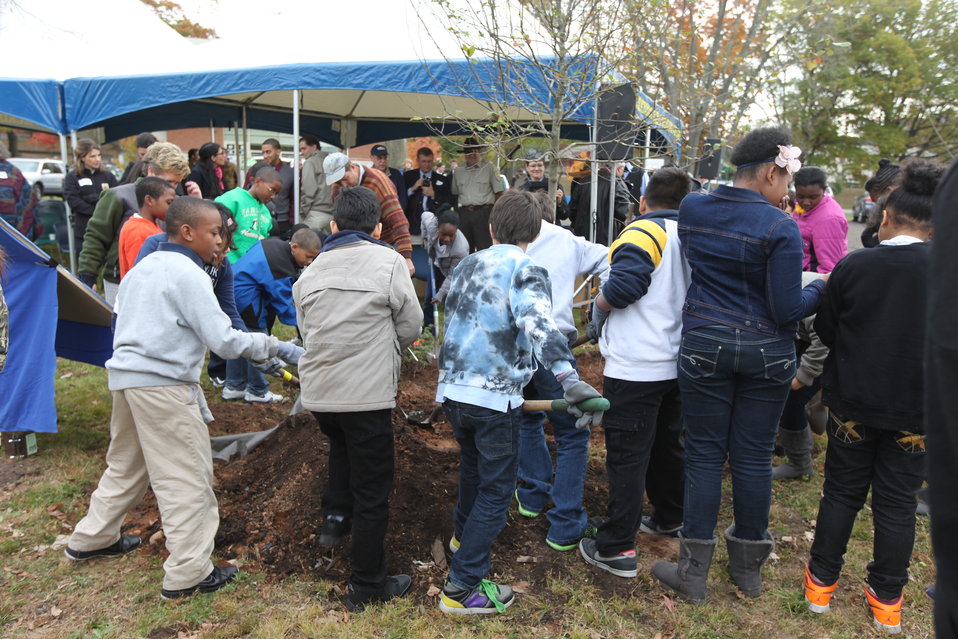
Tree planting

After the ceremony, student performed a tree planting and one of the urban oases sites across from Barnard Environmental Studies Magnet School.